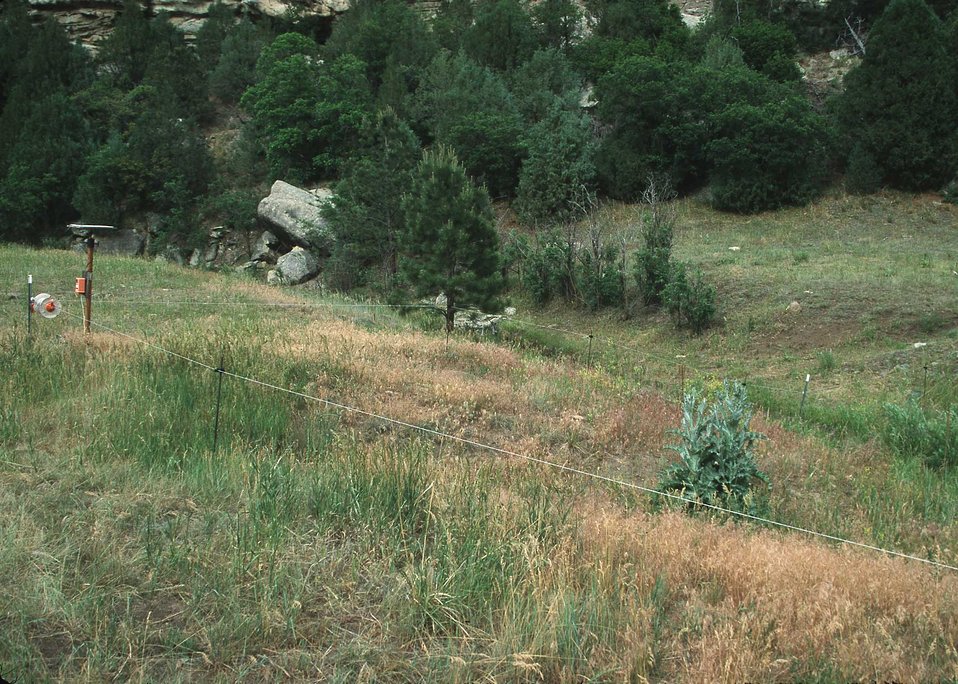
Temporary Electric Riparian Fence.